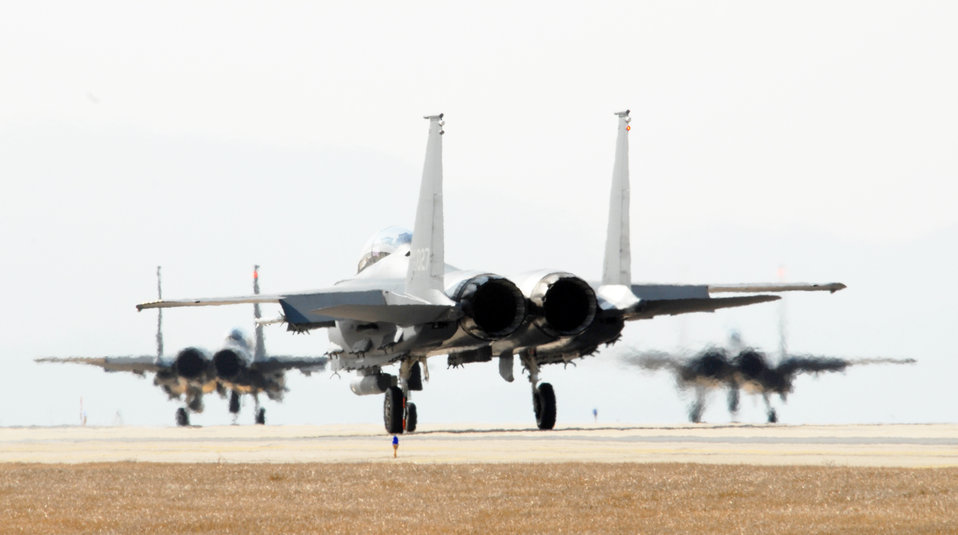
Buddy Wing brings Kunsan, South Korean airmen closer

South Korean air force F-15K Slam Eagles from the 11th Tactical Fighter Wing taxi down the flightline prior to take off while participating in the Buddy Wing Exercise March 10 at Kunsan Air Base, South Korea. Members of the 8th Fighter Wing and 11th TFW are participating to practice and enhance combined air operations.